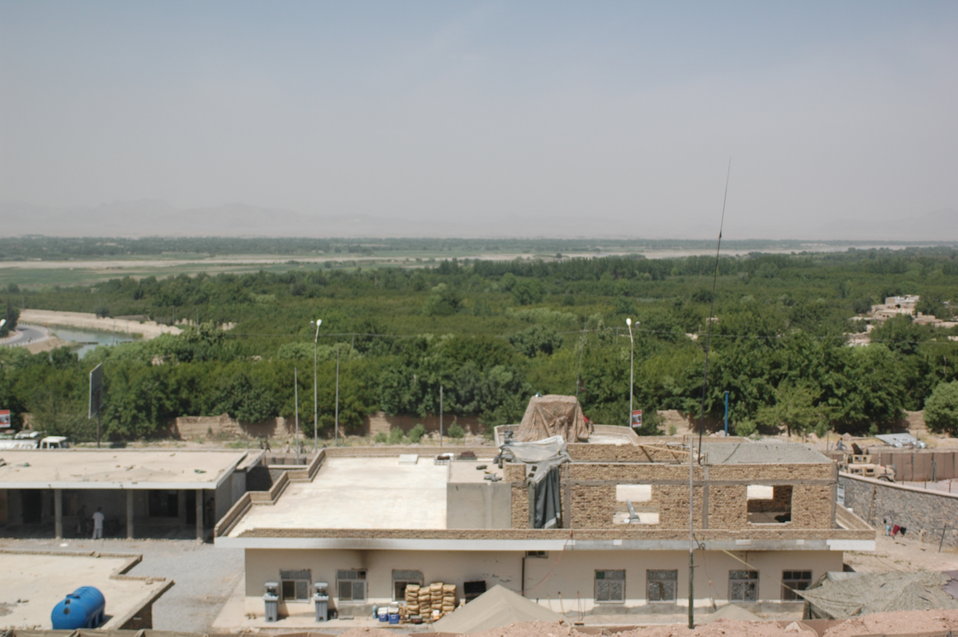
Dr Shah Visits Kandahar April 9, 2010